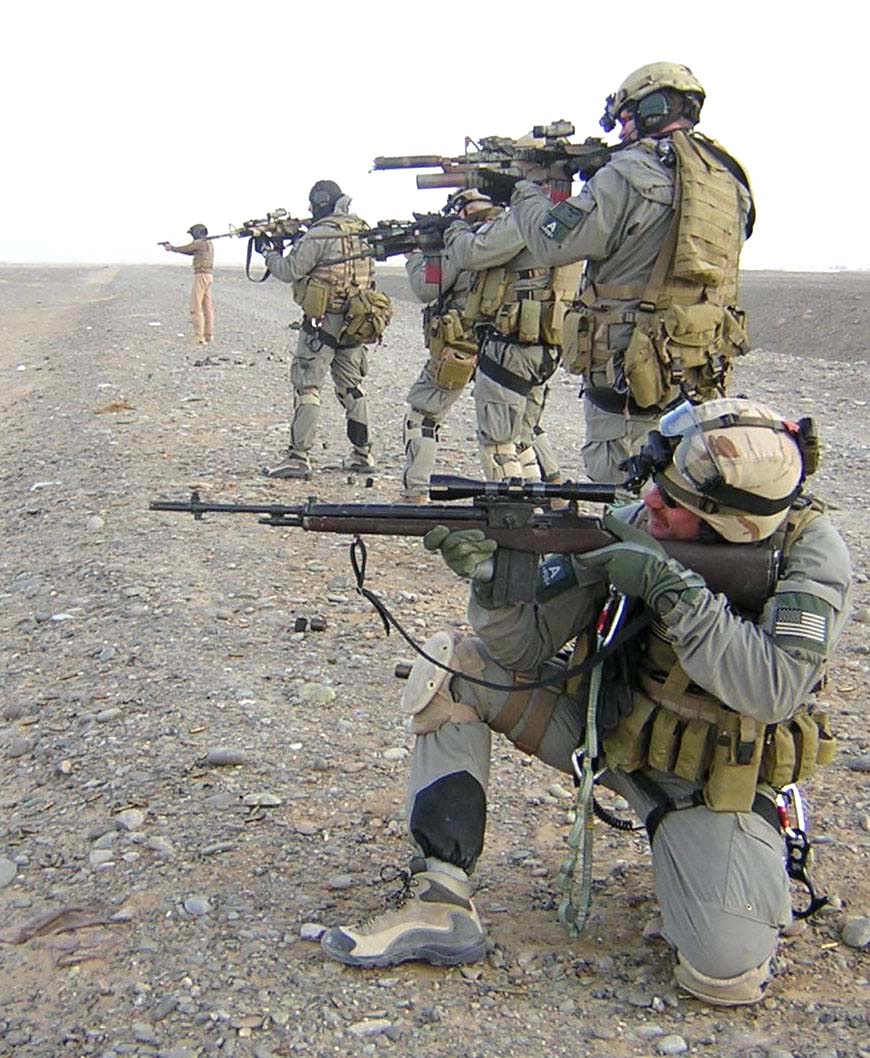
Kandahar pararescuemen poised to save lives

KANDAHAR AIR BASE, Afghanistan -- Pararescuemen from the 59th Expeditionary Rescue Squadron hone their combat skills at the Tarnak Range here.